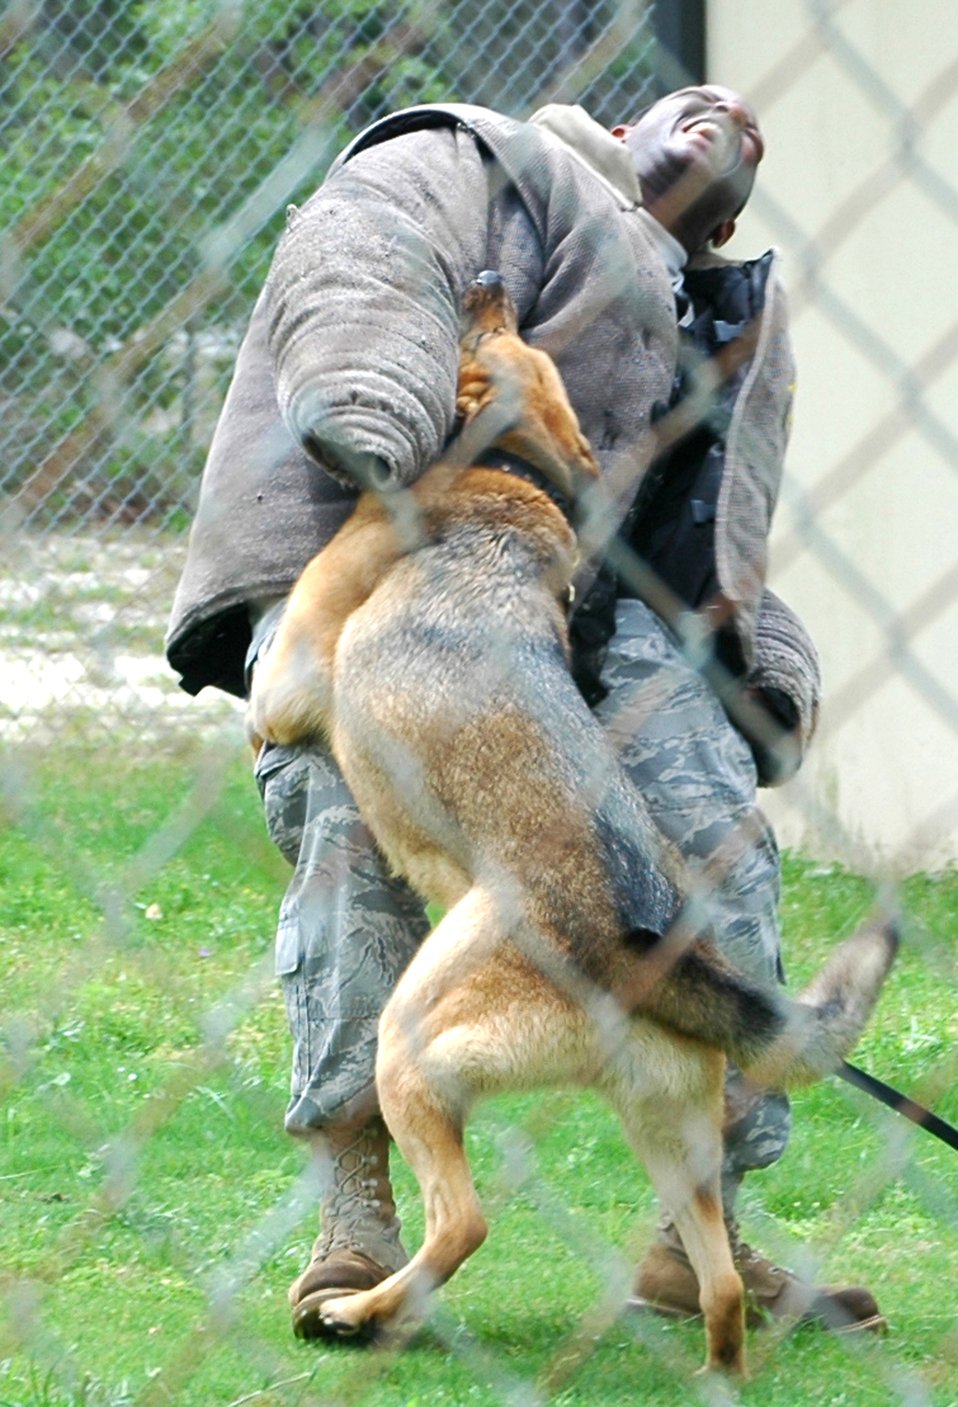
Ouch!

Staff Sgt. Jonathon Winters is